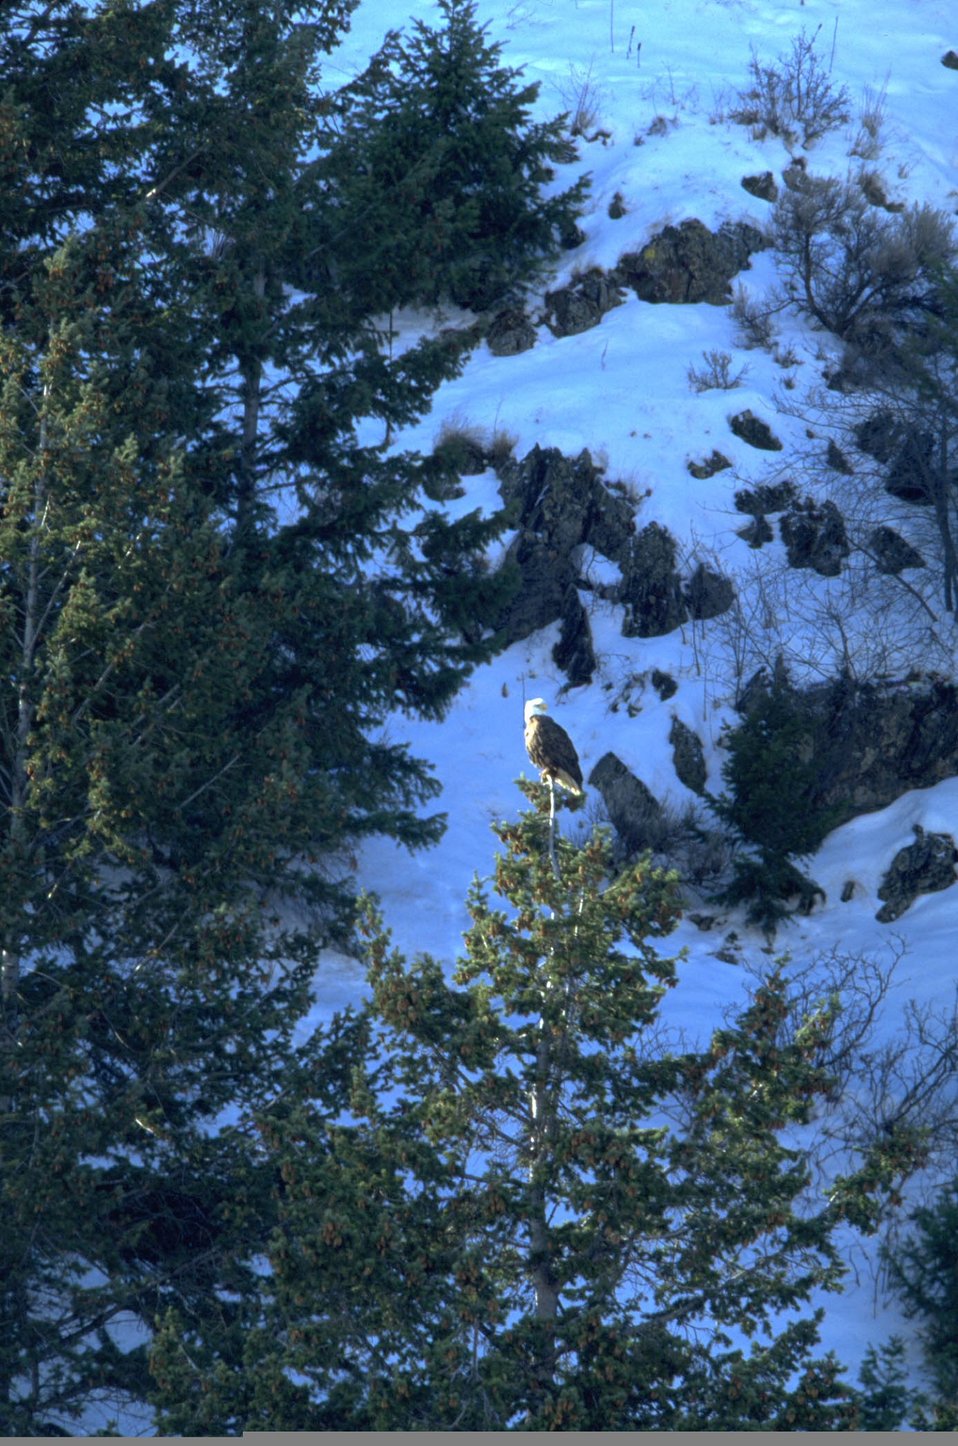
Bald eagle in trees